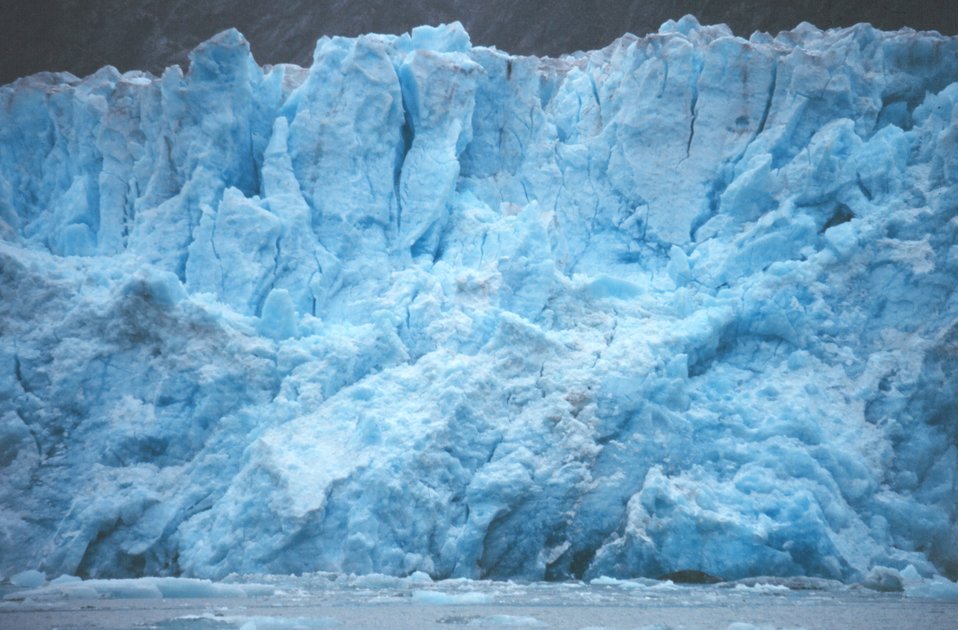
A close-up of the Sawyer Glacier